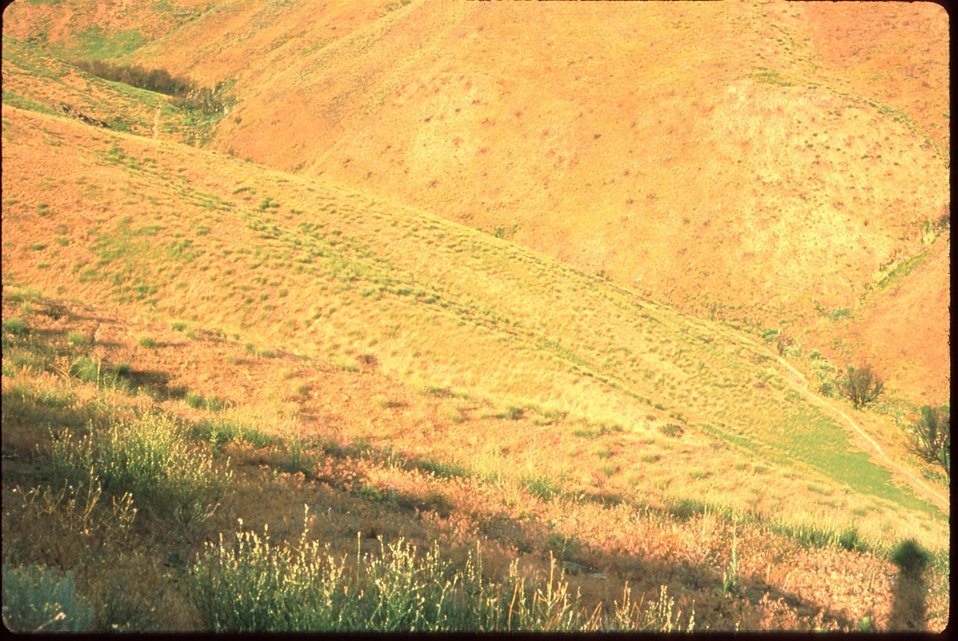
Rush Skeleton weed in Boise Foothills Idaho vegetation Plants in BLM